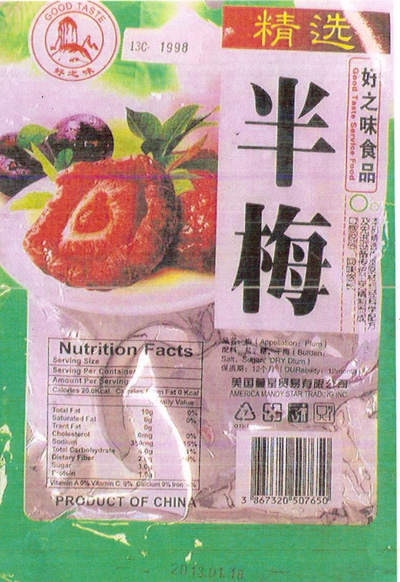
RECALLED – Plums

September 27, 2013 – Product Recall – Mandy Star Trading Inc. Is Issuing An Alert On Undeclared Sulfites In 'Good Taste' Brand Plum.